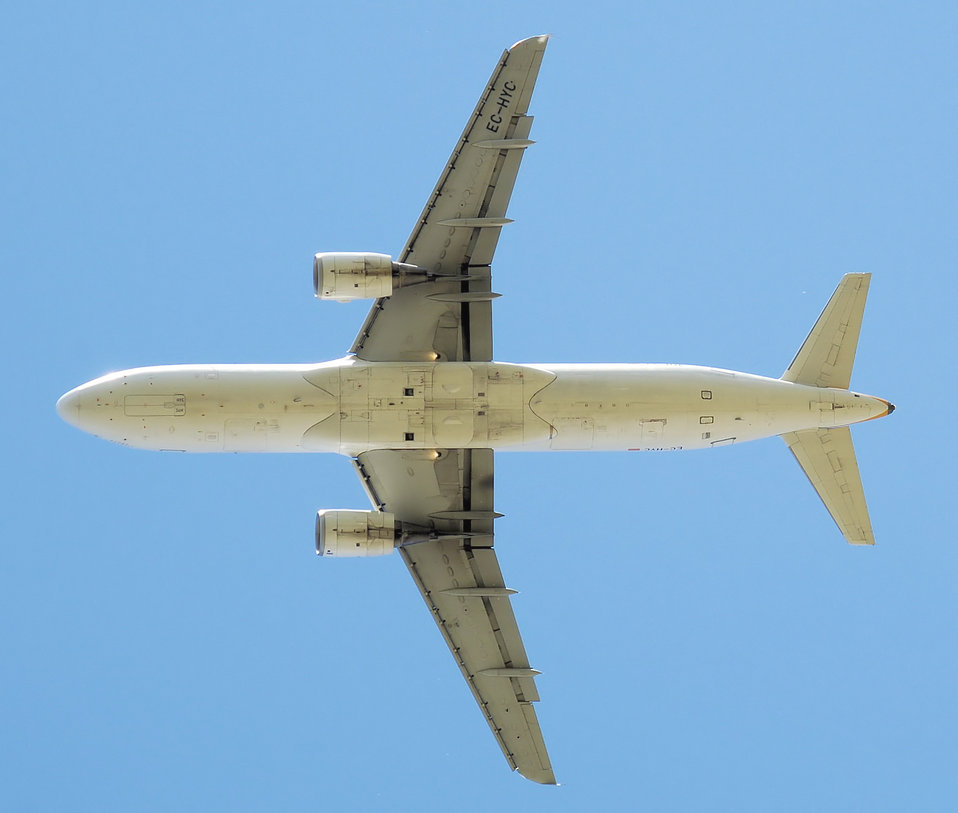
Iberia Airbus A320-200 (EC-HYC) takes off from London Heathrow Airport, England. The undercarriages have completely retracted.